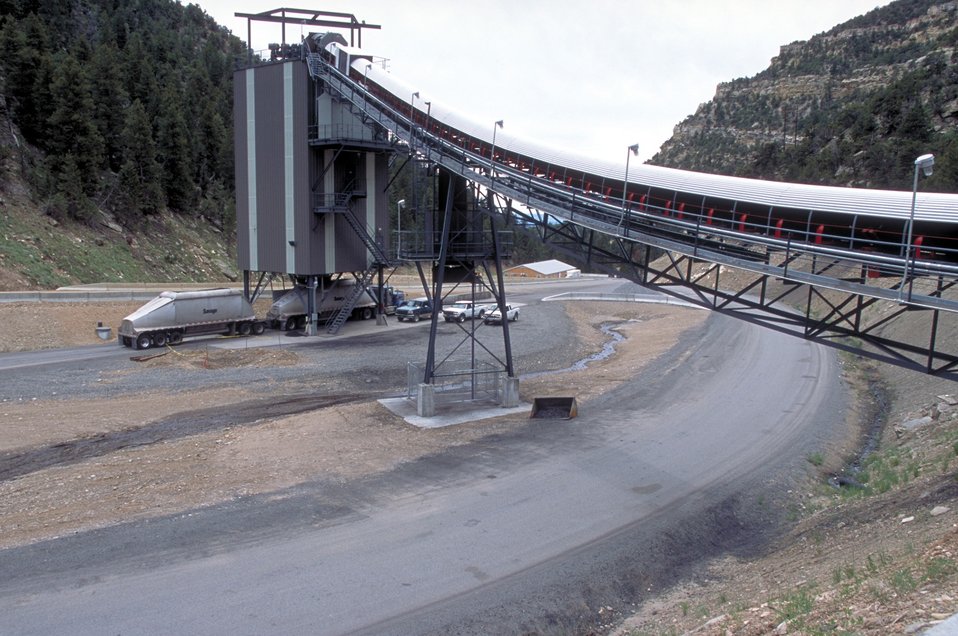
Coal production near Price, Utah.